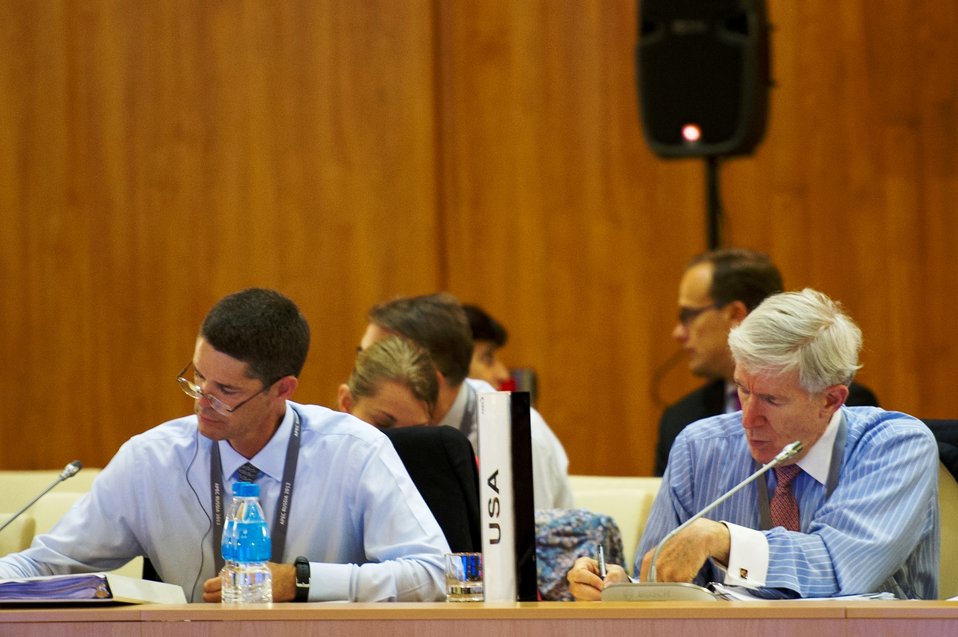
Under Secretary Hormats at APEC Ministerial Plenary Session

Under Secretary of State for Economic Growth, Energy, and the Environment Robert D. Hormats, right, with Deputy United States Trade Representative and U.S. Ambassador and Permanent Representative to theWorld Trade Organization (WTO) Michael Punke participate in the Asia Pacific Economic Cooperation Ministerial Plenary Session in Vladivostok, Russia, September 5, 2012.